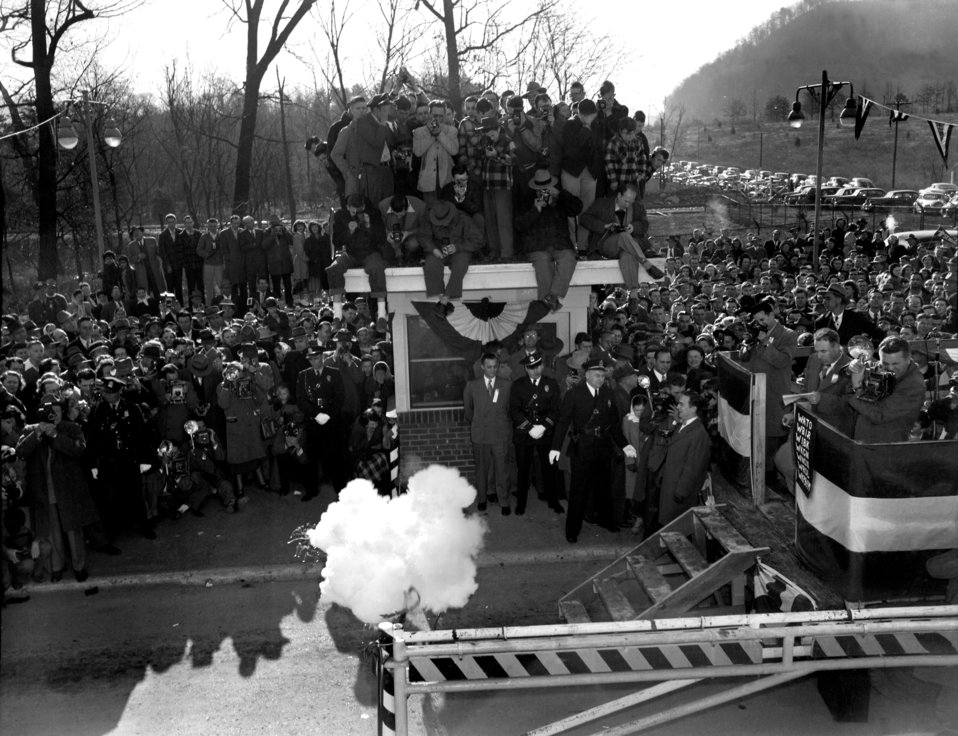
Gate Opening Celebration Elza Gate Oak Ridge

5427-A147 DOE photo by L.S.Chastagner
Gate Opening Celebration Elza Gate Oak Ridge Tennessee 3-19-1949